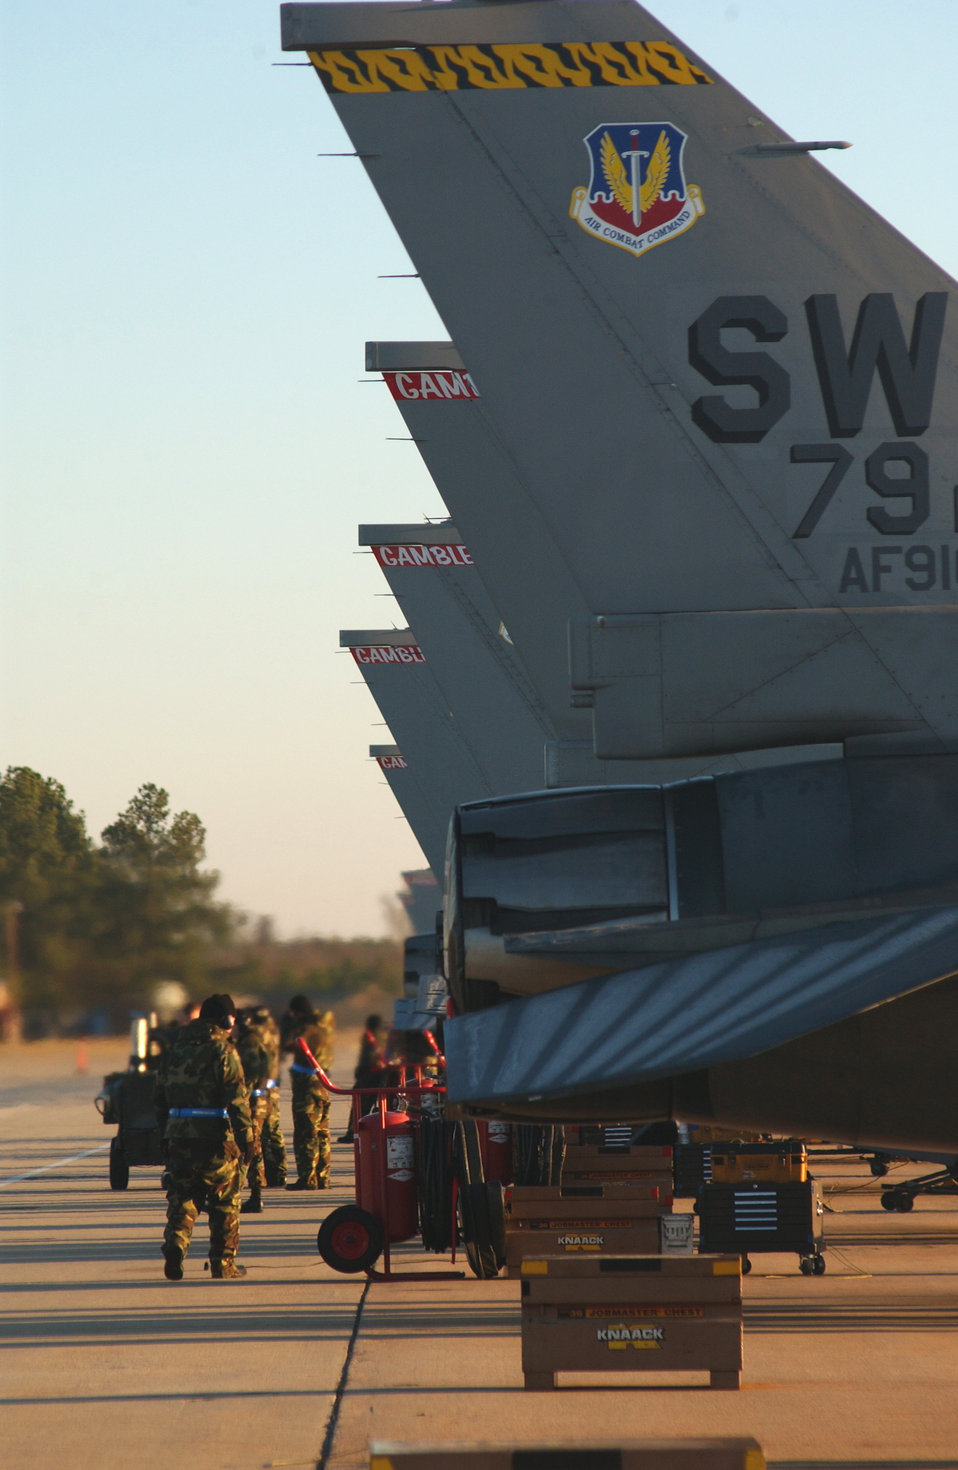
Exercising Falcons

Members of the 20th Fighter Wing generate F-16Fighting Falcons in support of Operational Readiness Exercise Sea Lion 07-03 Jan. 26 at Shaw Air Force Base, S.C. Exercises prepare Airmen for future deployments. Shaw AFB is home to the Air Force?s largest combat F-16 wing -- the 20th FW -- whose mission is to provide, project and sustain combat-ready air forces.